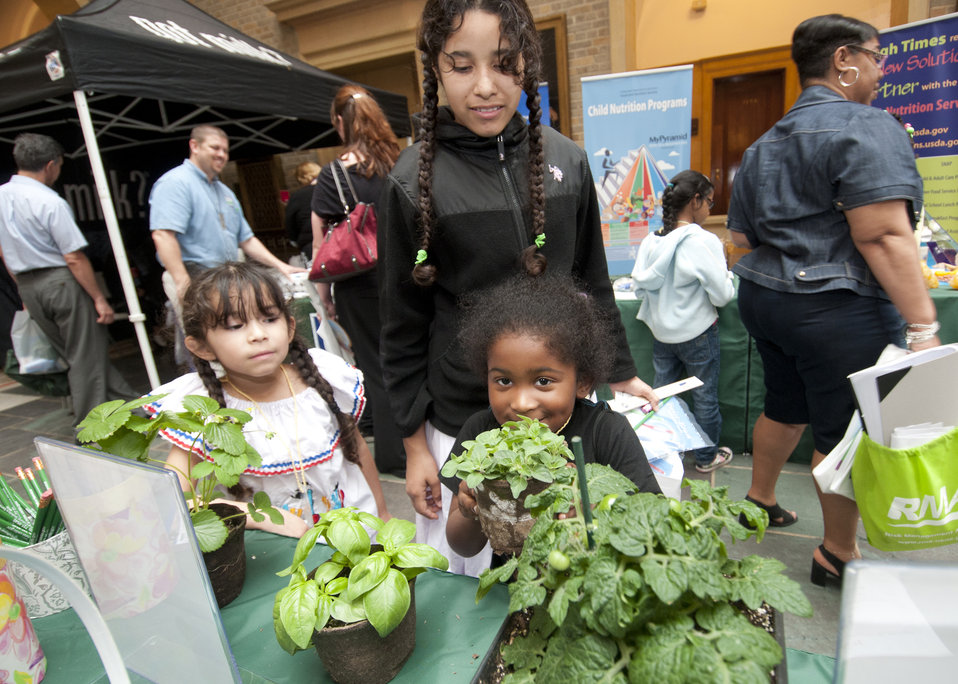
The U. S. Department of Agriculture (USDA) held its annual “Take Your Child to Work Day” on the patio of the Whitten Building, in Washington, DC, on Thursday, April 28, 2011. The program is designed to introduce young people to USDA’s wide range of responsibilities and services. Sisters Anieika (left) and Tania (black jacket) with Alex Kumah examine plants at the National Agricultural Statistics Service exhibit at Agriculture’s “Take Your Child to Work Day” event.